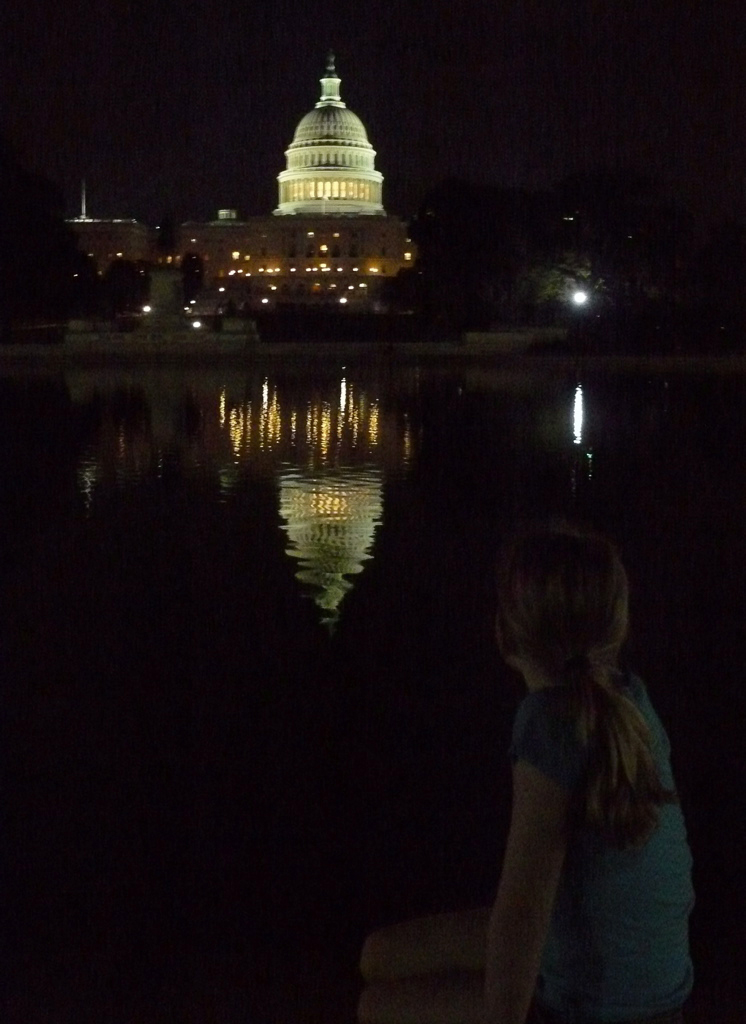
Winner named for My Air Force Life photo competition

Ethan Whitecotton won the My Air Force Life youth photo competition with this photo titled, 'Reflections.'